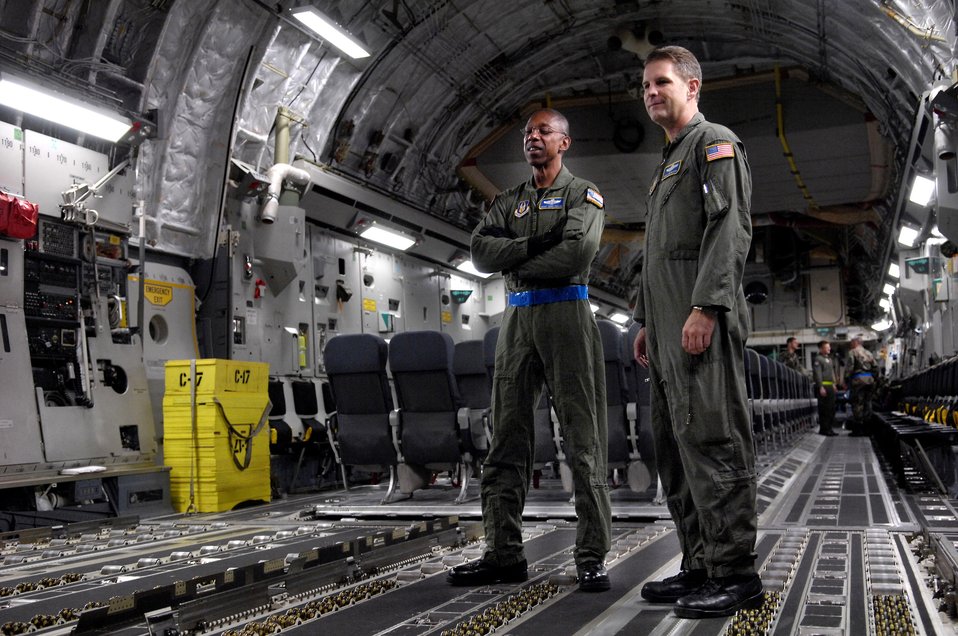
Off to the South Pole

Senior Master Sgt. Terry Philon and Senior Master Sgt. Jim Masura watch as pallets are loaded onto a C-17 Globemaster III before taking off on a winter fly-in mission for Operation Deep Freeze Aug. 20 at Christchurch, New Zealand. A C-17 and 31 Airmen from McChord Air Force Base, Wash., are flying in an augmentation of scientists, support staff, food and equipment for the U.S. Antarctic Program at McMurdo Station.